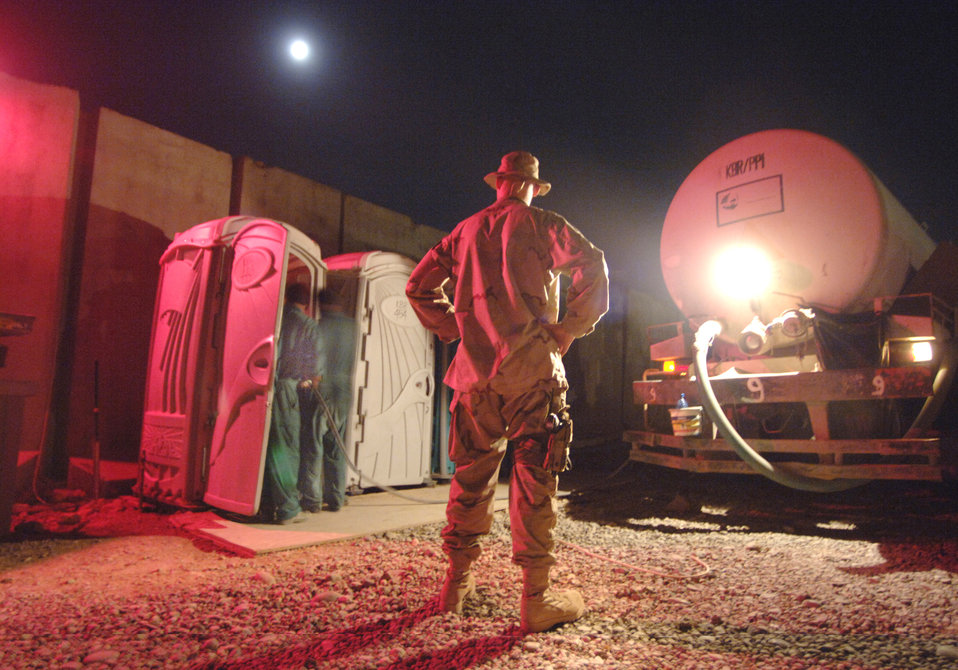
Under a watchful eye

Staff Sgt. Robert Bouick monitors two contractors cleaning portable latrines near the theater hospital at Balad Air Base, Iraq, Oct. 2. Sergeant Bouick is a force protection escort and fuels specialist deployed from Fairchild Air Force Base, Wash. He works 12-hour shifts with 115 other Airmen charged with maintaining